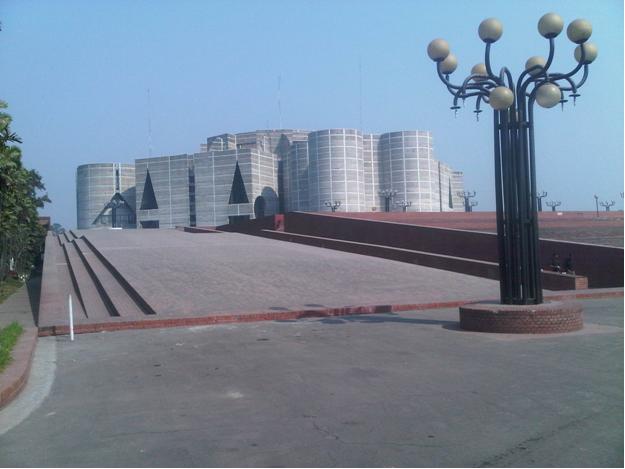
Principal Deputy Assistant Secretary Pyatt Travels to Dhaka

Principal Deputy Assistant Secretary for the Bureau of South and Central Asian Affairs Geoffrey Pyatt travels to Dhaka, Bangladesh, February 11-13, 2011.